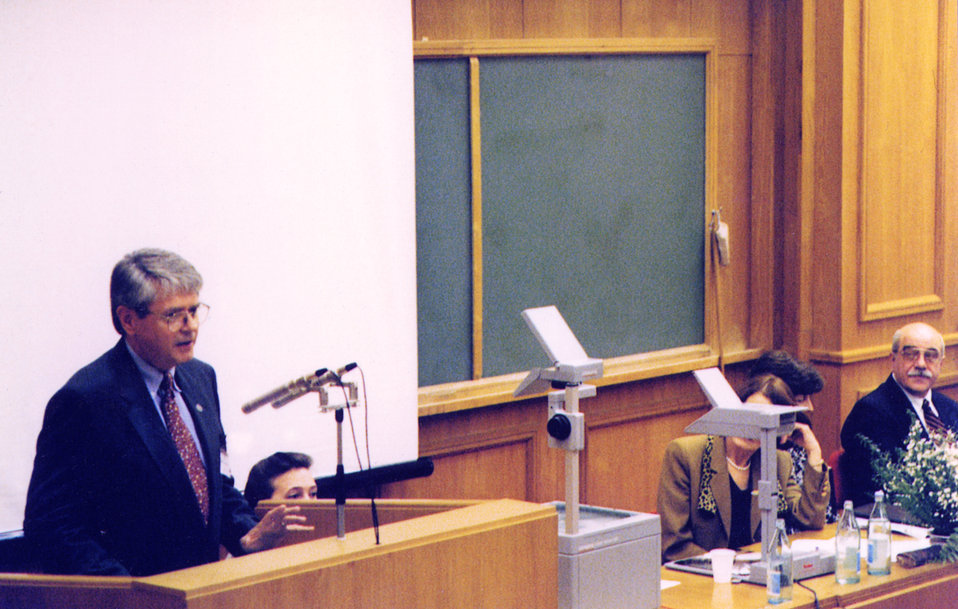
Here Bob Baldwin, Assoc. Dir., Off. of Global Health, is seen speaking at the US-Russia Health Committee in Moscow, 1997.